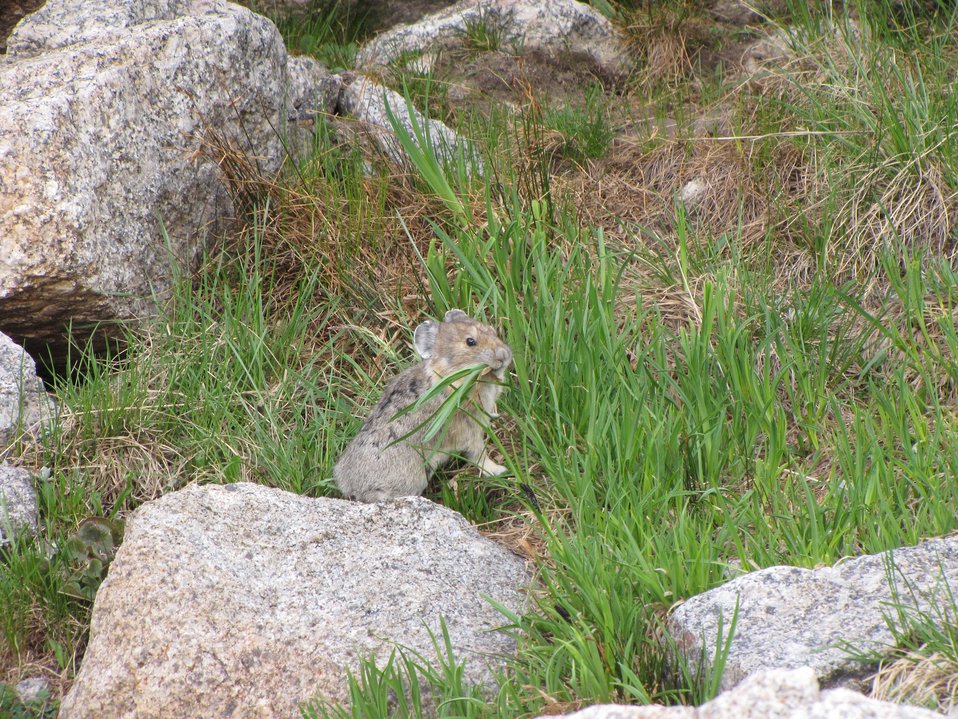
American Pika